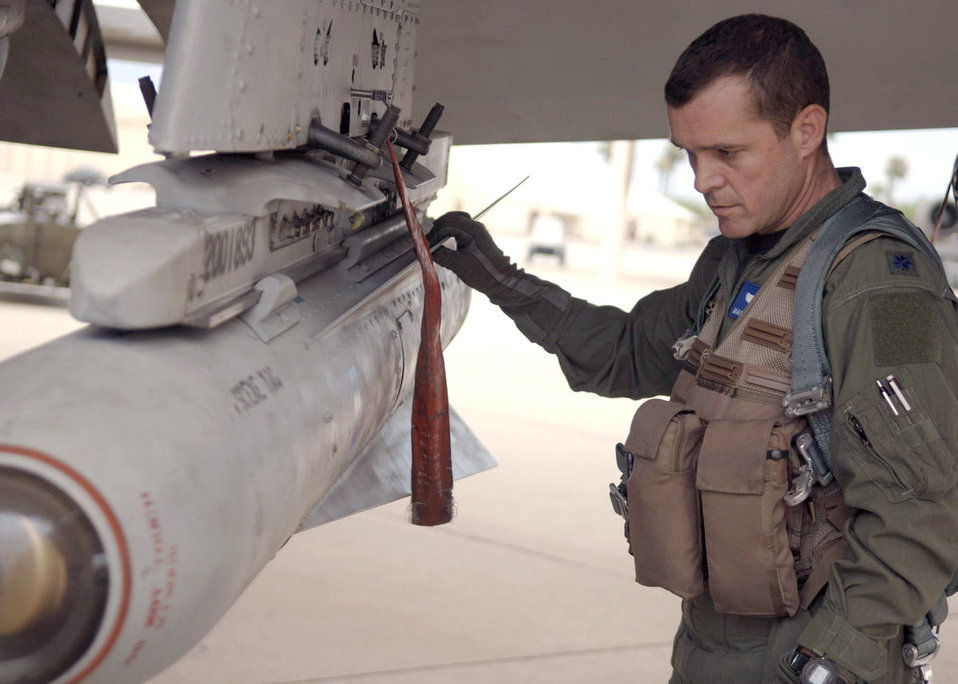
Thunderbolts on duty

Lt. Col. Francis McDonough performs pre-flight inspections on an A-10 Thunderbolt II as he prepares for a sortie at Davis-Monthan Air Force Base, Ariz., on July 7. Colonel McDonough is assigned to the 355th Wing and was recently deployed to Bagram Air Base, Afghanistan, in support of Operation Enduring Freedom.